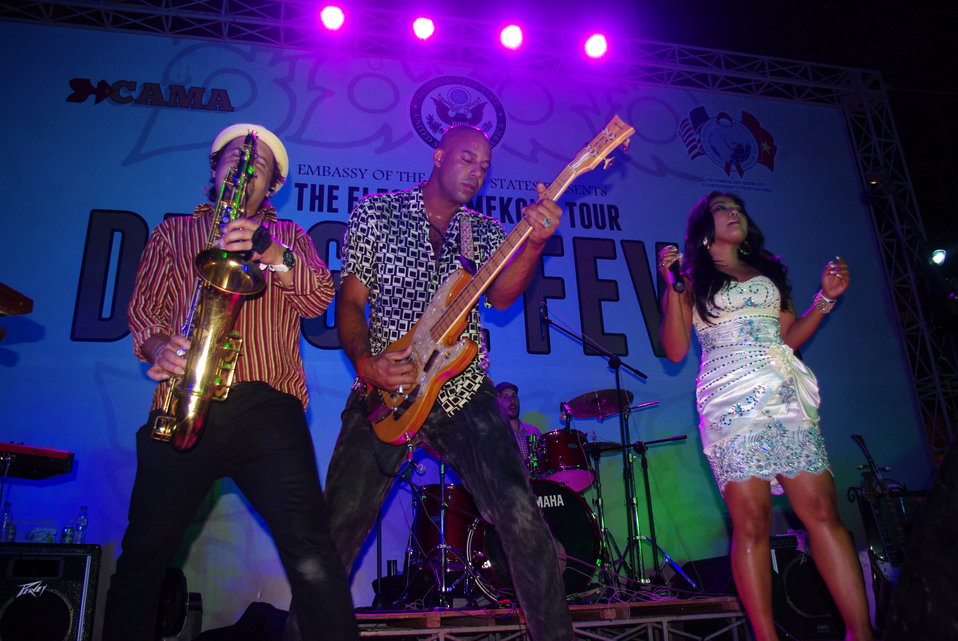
PEPFAR, U.S. Embassy Host Dengue Fever Concert in Hanoi